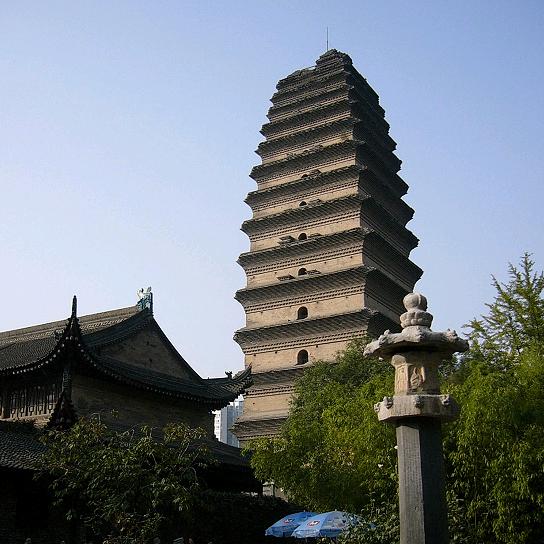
Small Wild Goose Pagoda, built by 709, was adjacent to the Dajianfu Temple in Chang'an, where Buddhist monks from India and elsewhere gathered to translate Sanskrit texts into Chinese